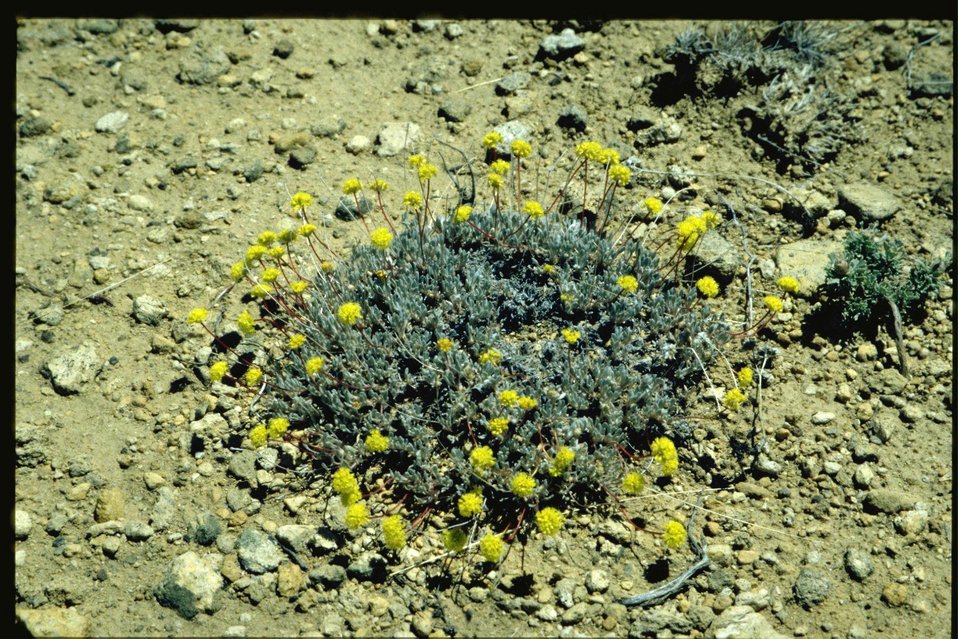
Far shot of buckwheat habitat.